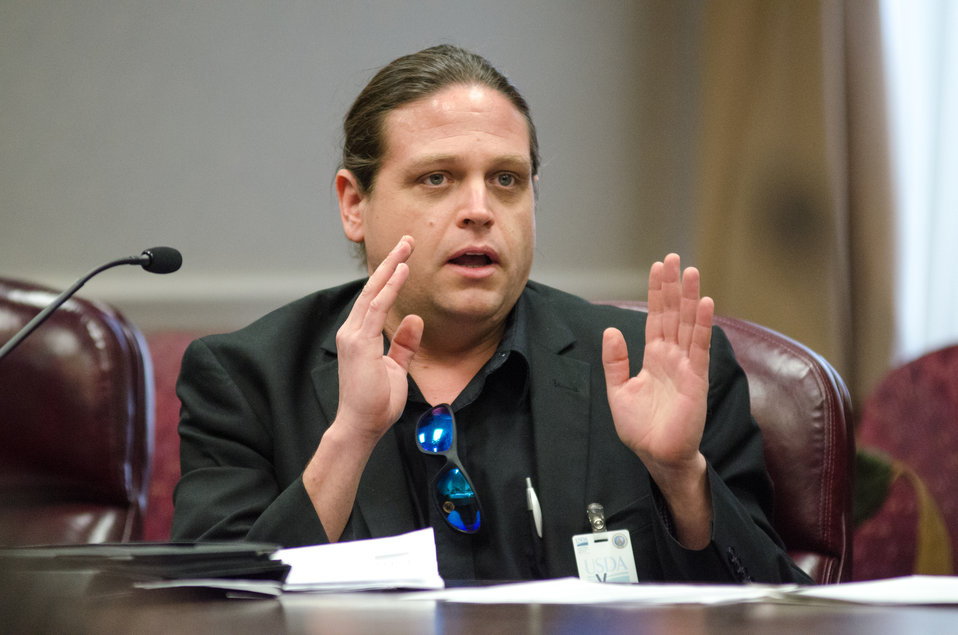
Nebraska Indian Community College President Micheal Oltrogge, Macy, Nebraska, presents some of his college's needs to U.S. Department of Agriculture Senior Advisor to the Secretary on Tribal Relations and Office of Tribal Relations Acting Director Max Finberg, during the USDA and American Indian Higher Education Consortium Leadership Group Winter Meeting, at the USDA Whitten Building Williamsburg Room, in Washington D.C., on Friday, Feb. 8, 2013.